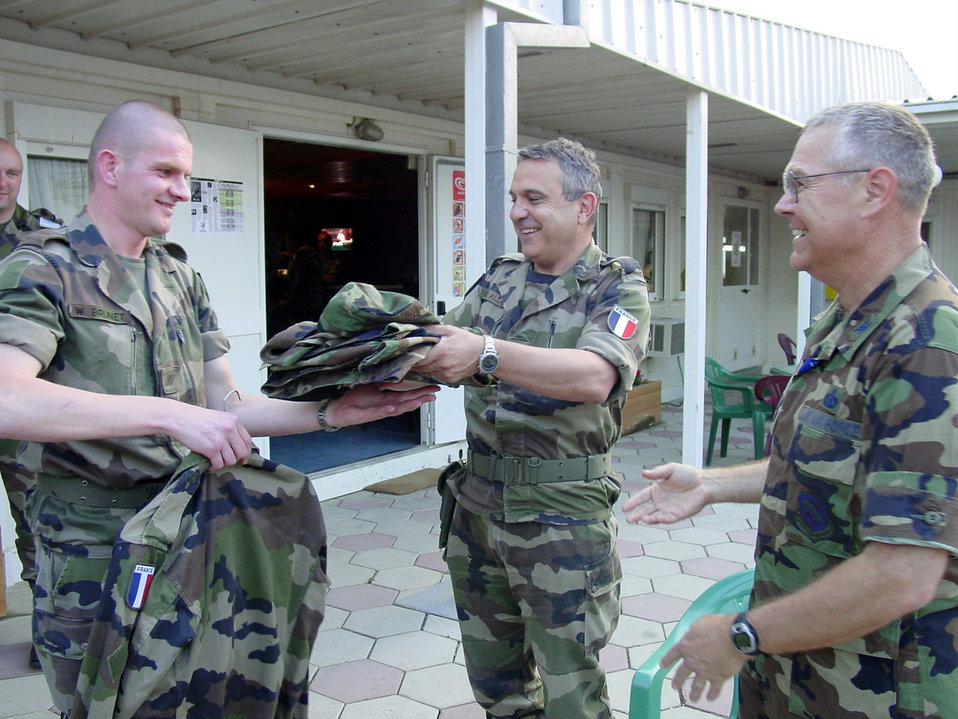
New uniform

PRISTINA, Kosovo -- French army Brig. Gen. Jean-Claude Allard (center) hands a U.S. Air Force uniform to French army Sgt. Willy Brunet while Col. David Adams waits to receive the French army uniform during a ceremony here recently. General Allard is the Kosovo Force assistant chief of staff for operations, and Sergeant Brunet is a signal noncommissioned officer in the French National Intelligence Center. Colonel Adams is the KFOR headquarters senior national representative and is deployed from Cheyenne Mountain, Colo.